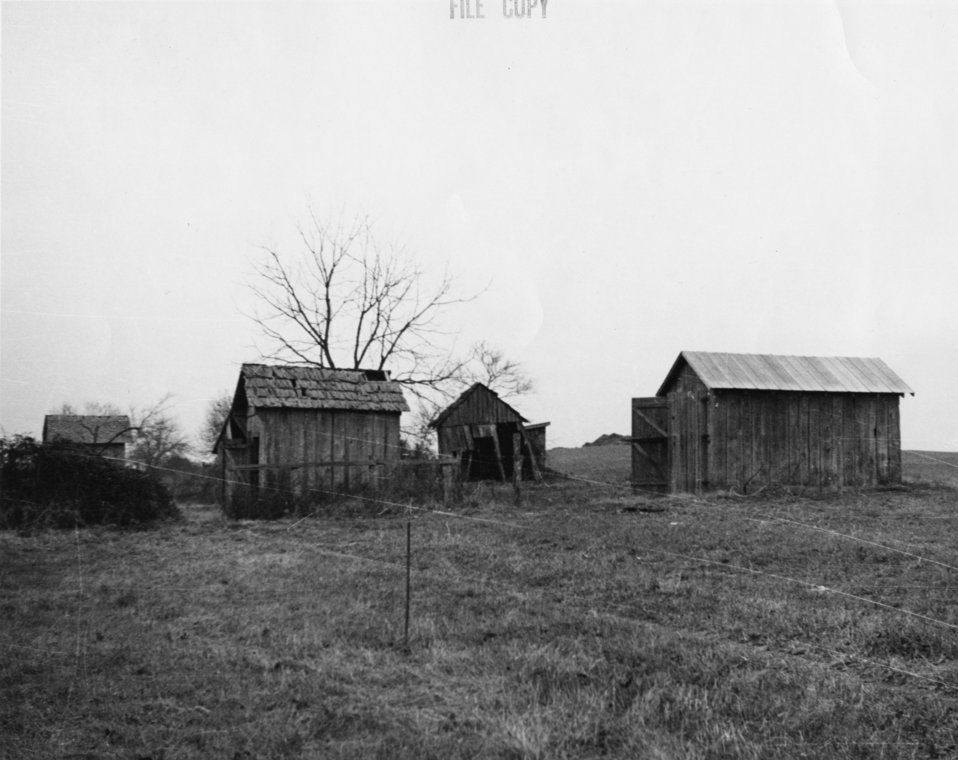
Early settlers at Oak Ridge